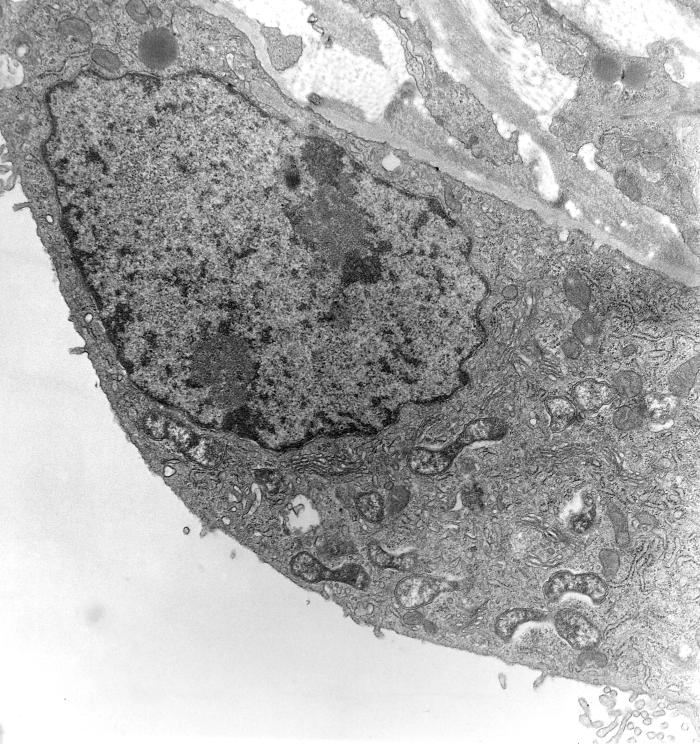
This 1976 transmission electron micrograph (TEM) depicted a hypertrophic peritoneal mesothelial cell of mouse that had been experimentally infected intraperitoneally with Orientia tsutsugamushi rickettsial micro-organisms. This particular photomicrograph revealed that there were multiple organisms free within the host cell's cytoplasm.